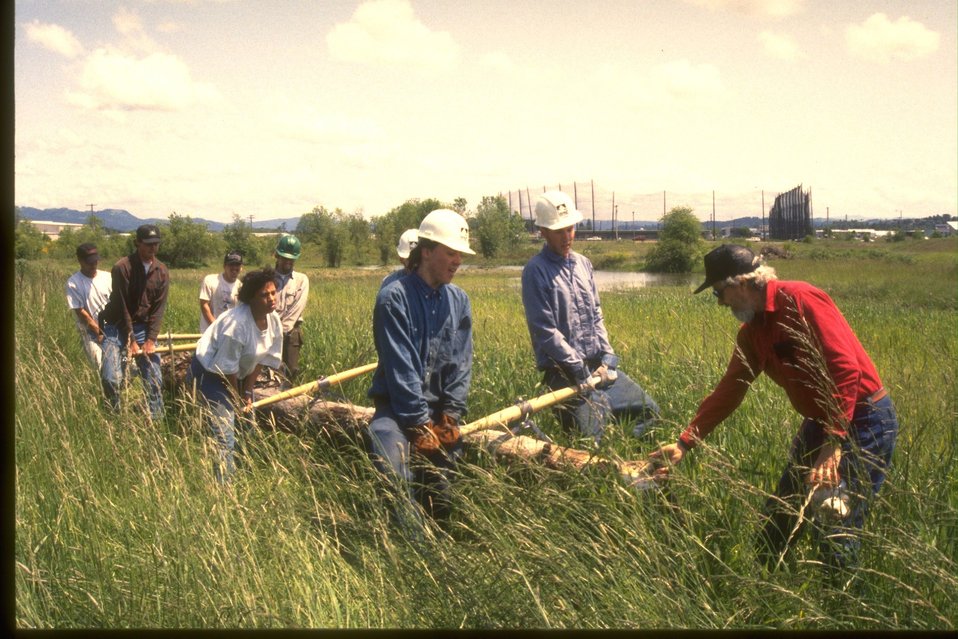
Youth Conservation Corp. Crew